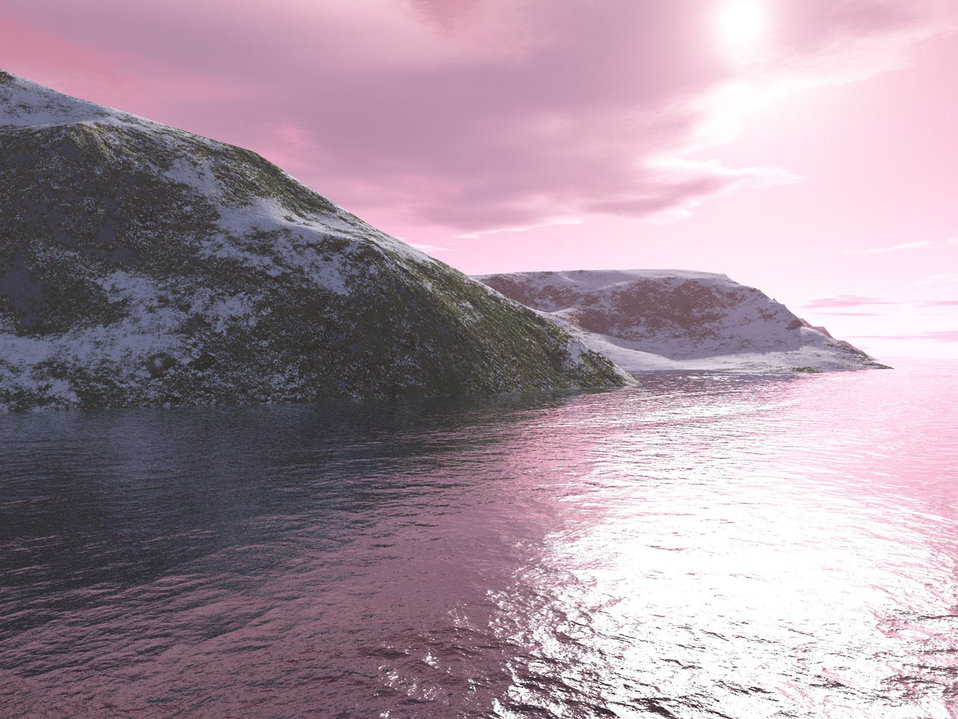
Arctic pink

The arctic at sunrise.